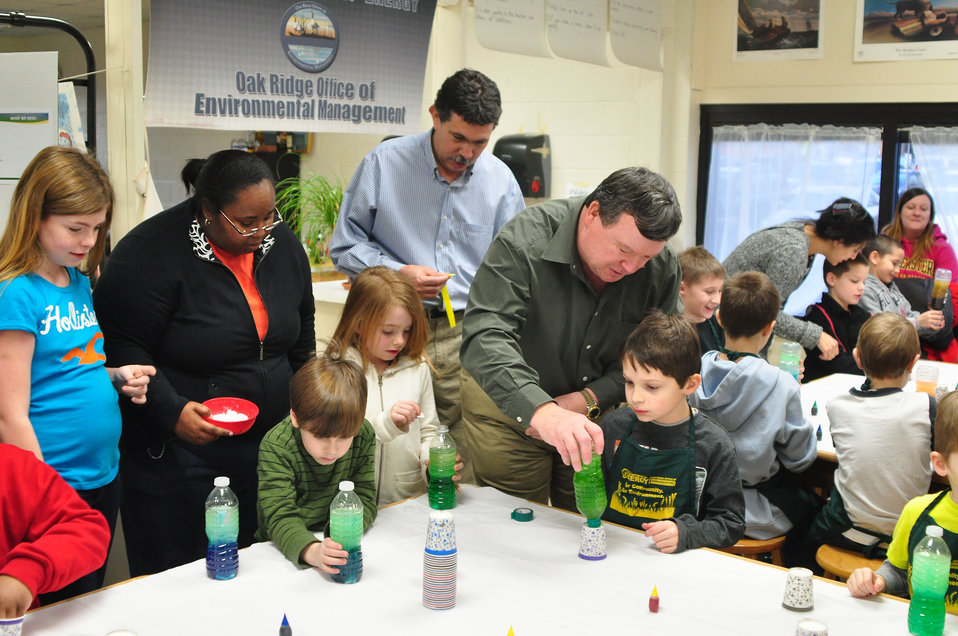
Woodland School STEM Night Oak Ridge 2014

14-013 DOE photo Lynn Freeny 1-23-2014 Oak Ridge Tennessee